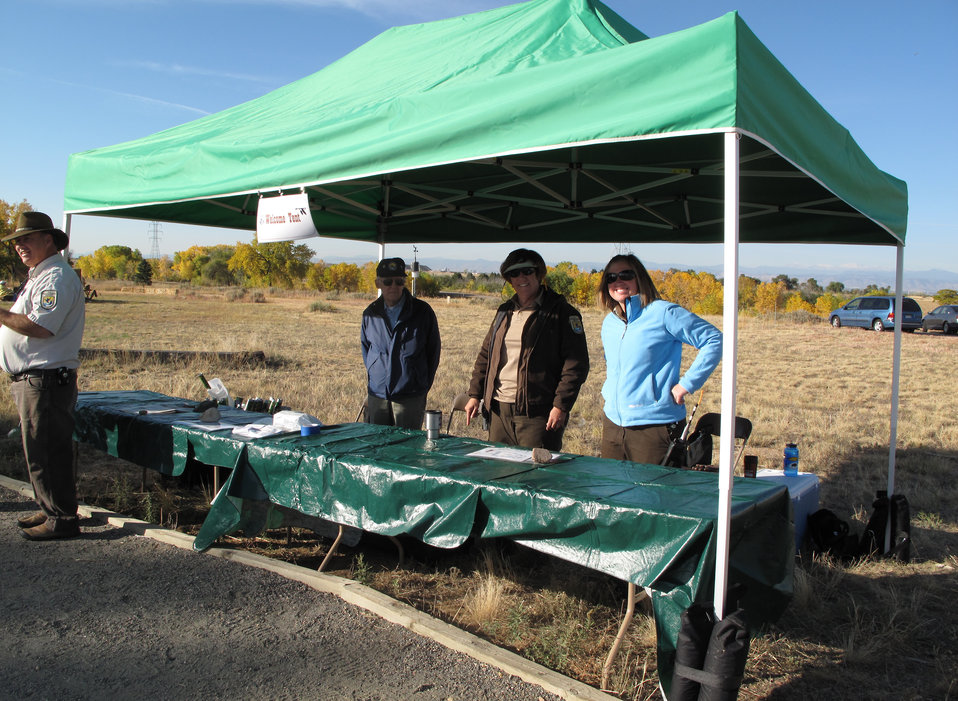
Refuge Round-up 2010

Welcome!